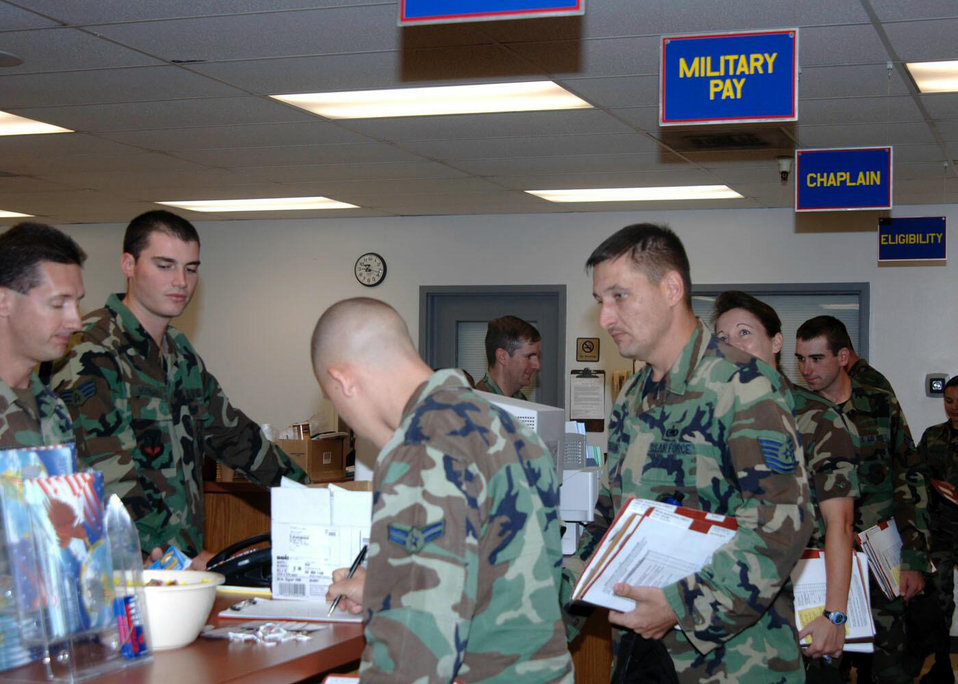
Lining up, moving out

DAVIS-MONTHAN AIR FORCE BASE, Ariz. -- Airmen process through the deployment line here Aug. 17 to prepare for an upcoming air and space expeditionary force cycle. About 1,500 Airmen here will deploy worldwide to support the war on terrorism.